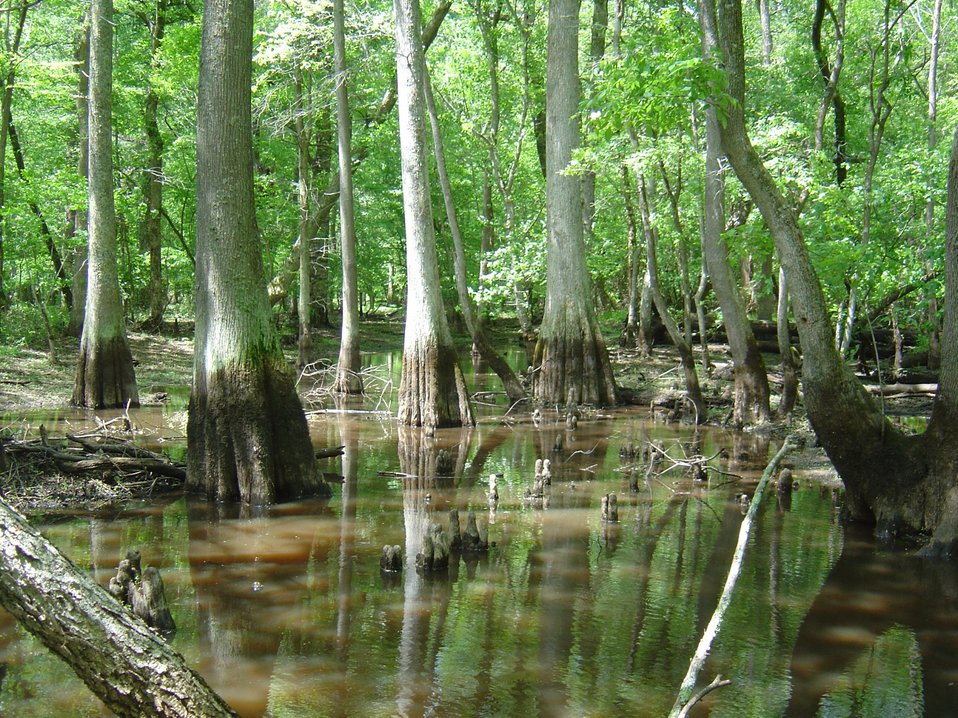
Forested wetland

Florested wetland in the Pocomoke River watershed.